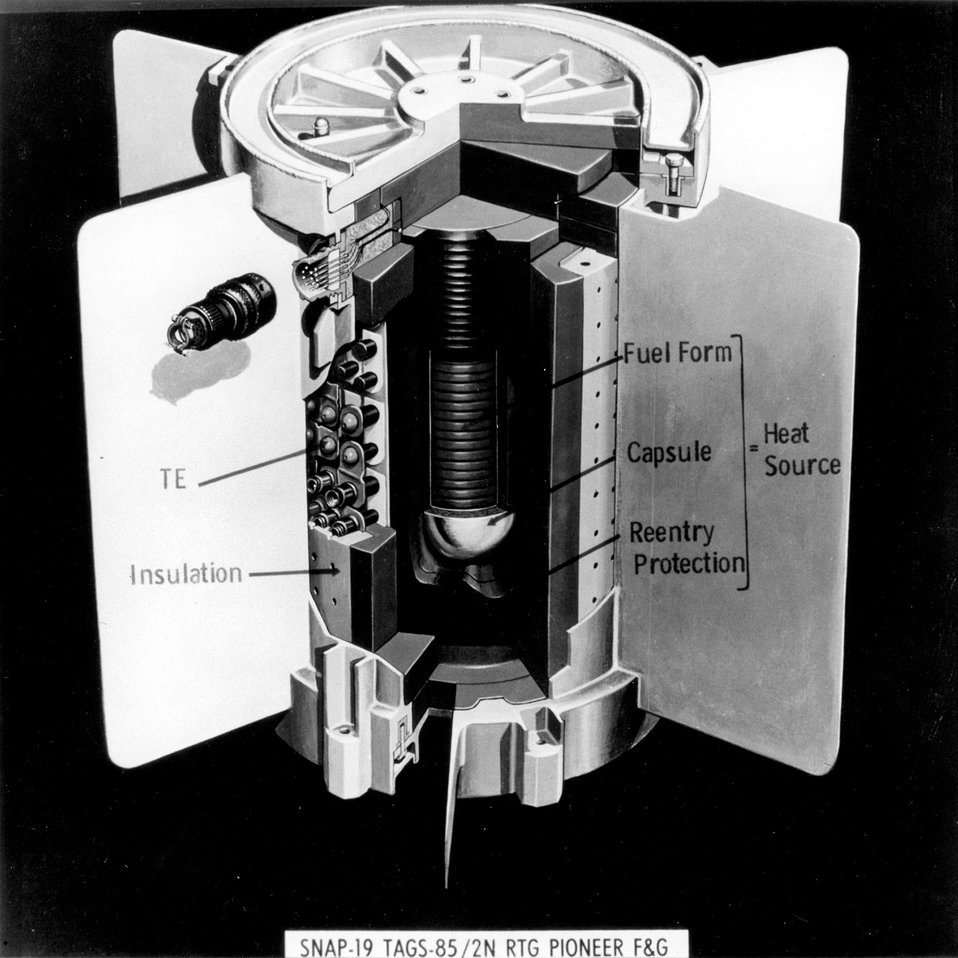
Cutaway of the AEC SNAP-19 radioisotope thermometric generator which will be the power system for NASA's Pioneer-Jupiter Flyby missions in 1972 and 1973.